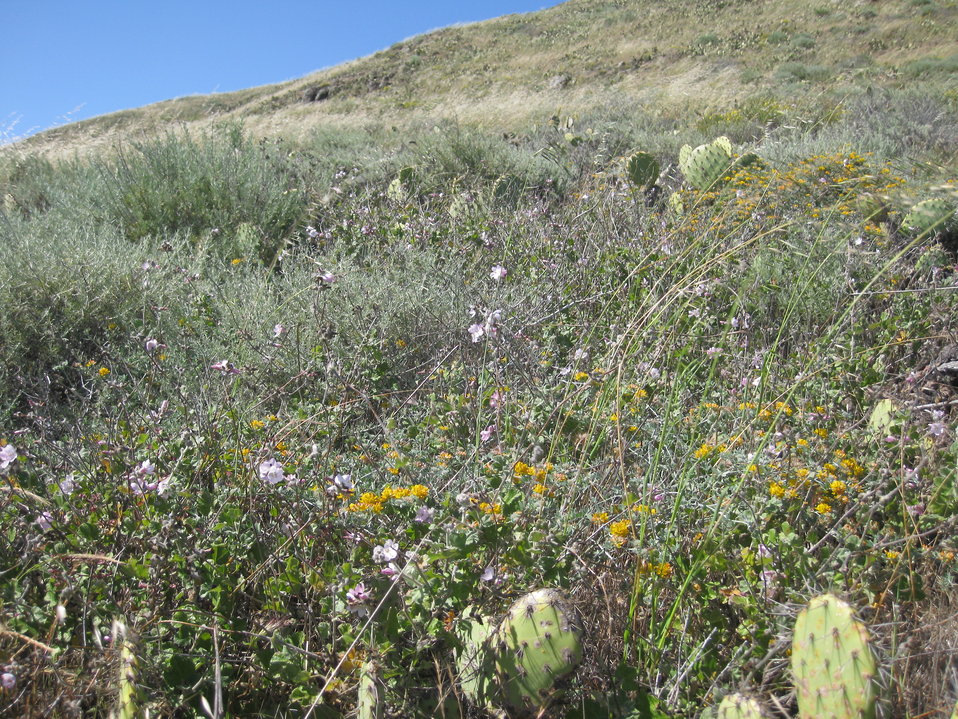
San Clemente Island bush mallow and habitat

San Clemente Island bush mallow (Malacothamnus clementinus) is a federally endangered plant that is endemic to San Clemente Island, the southernmost of eight Channel Islands off the southern California coast. It's stems are woody only at the base and the plant can reach a height from 2.3 to 3.3 feet tall. It's leaves are 1 to 2 inches wide and bicolored, with green upper surfaces covered in short fine hairs. The flowers have either pink or white and fading lavender petals.